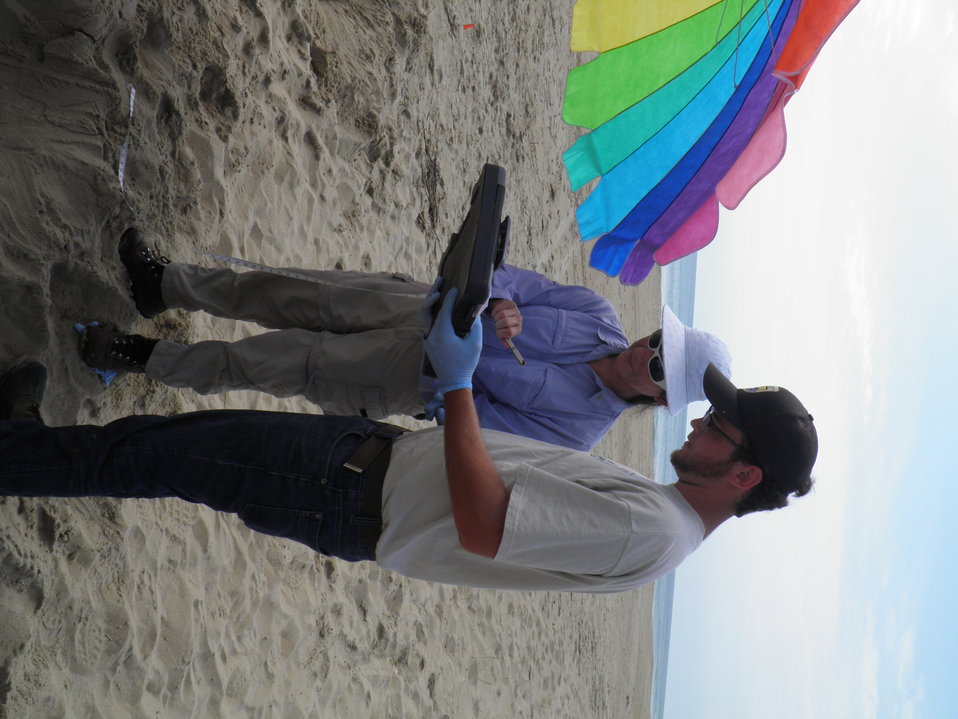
CDIP Summer Employee assists with collecting data.

Credit: USFWS
Crawl 2, Nest 2